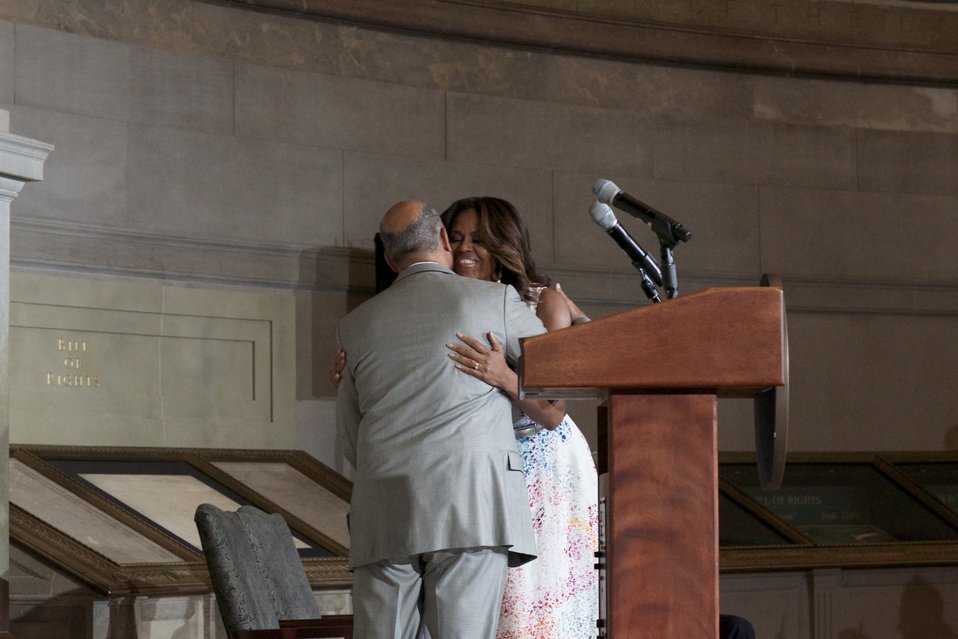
Naturalization Ceremony with Michelle Obama